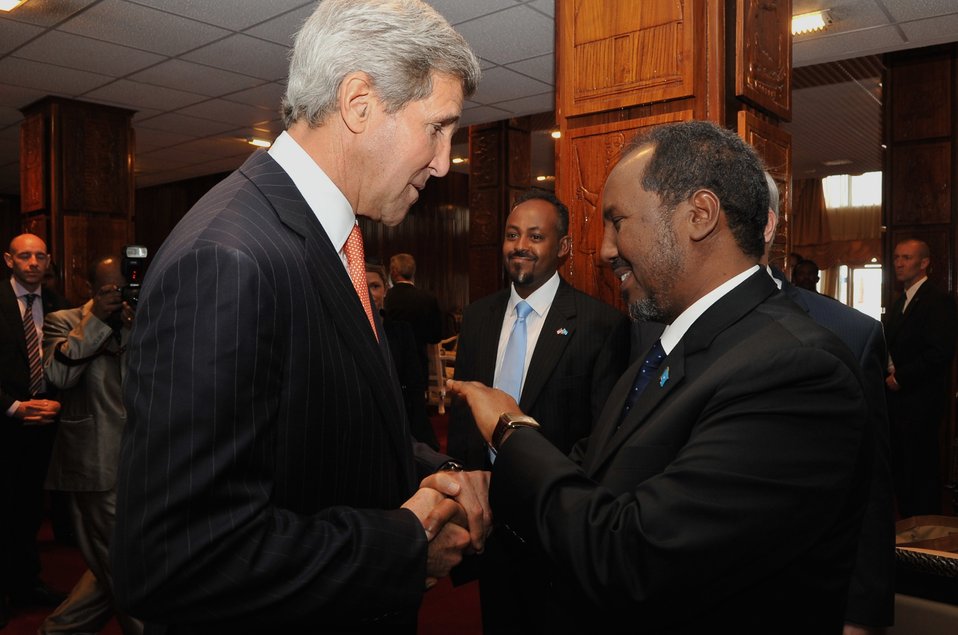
Secretary Kerry, Somali President Mohamud Meet in Ethiopia

U.S. Secretary of State John Kerry greets Somali President Hassan Sheikh Mohamud before the two held a bilateral meeting in Addis Ababa, Ethiopia, on May 3, 2014.